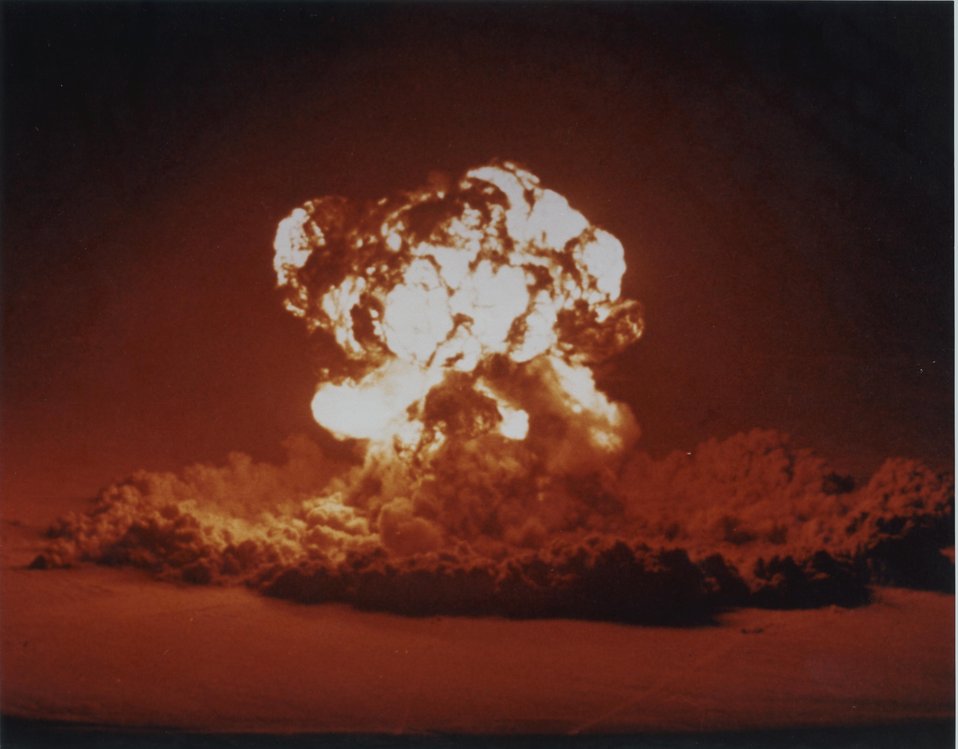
OPERATION PLUMBBOB TEST. (JUNE 18, 1957)